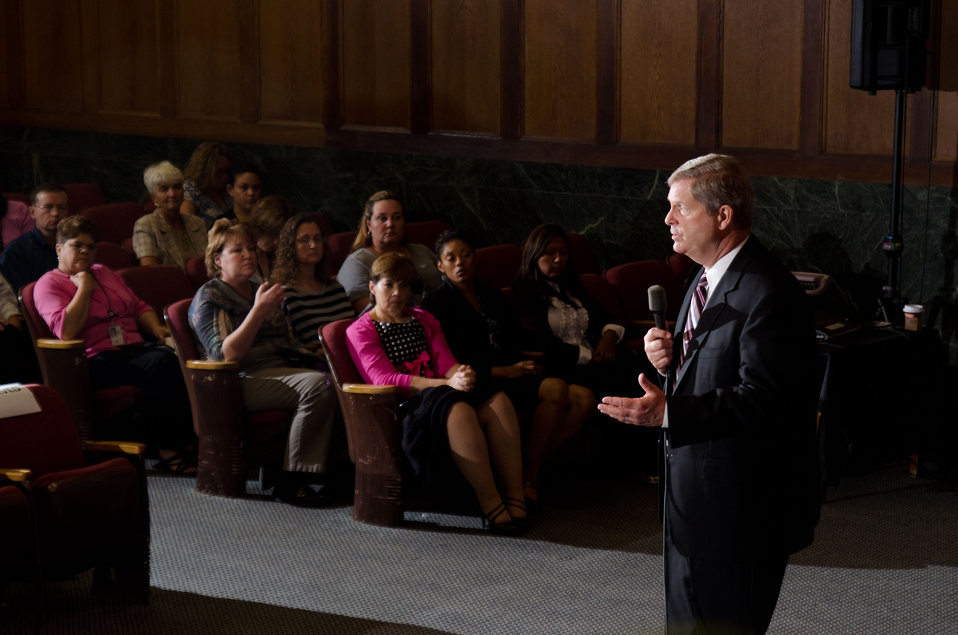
Agriculture Secretary Tom Vilsack receives a standing ovation as he departs the Jefferson after his keynote address for National Hispanic Heritage Month at the United States Department of Agriculture (USDA), in Washington, D.C. on Thursday, September 15, 2011.